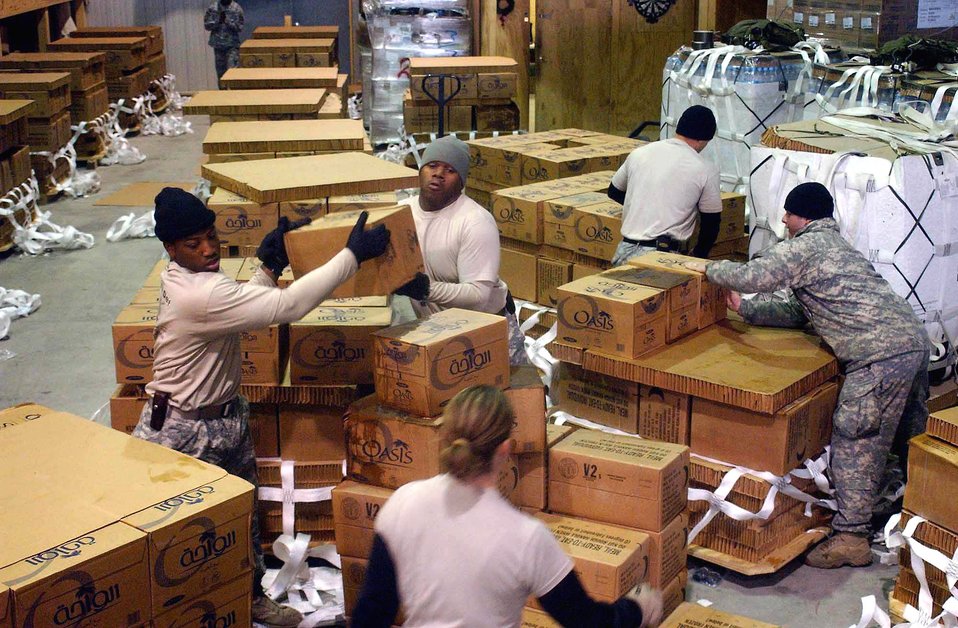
Christmas delivered by air

Riggers with the 10th Logistics Task Force work to create holiday bundles for forward troops within the theater Dec. 21. They built more than 50 bundles within a two-day period. The bundles were air-dropped Dec. 23 through 28 to forward-deployed servicemembers by C-130 Hercules deployed to the 774th Expeditionary Airlift Squadron.